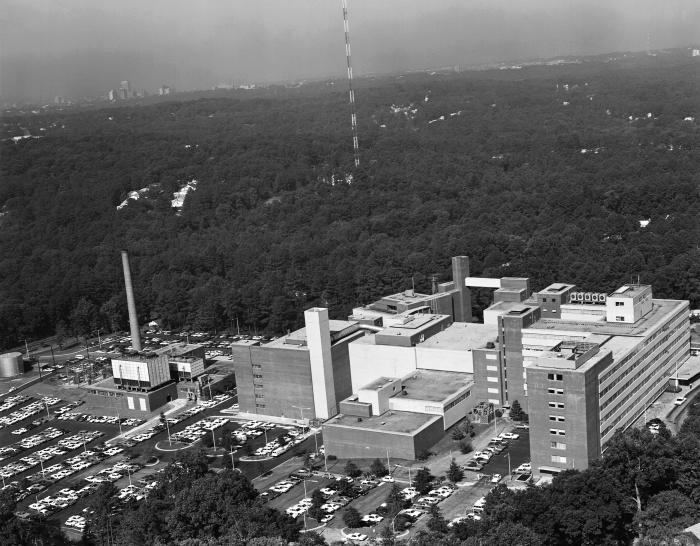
This historic aerial view, looking towards the west, depicts the appearance of the Centers for Disease Control and Prevention's (CDC) geographic presence in 1967. Building 1 is seen at the far right.